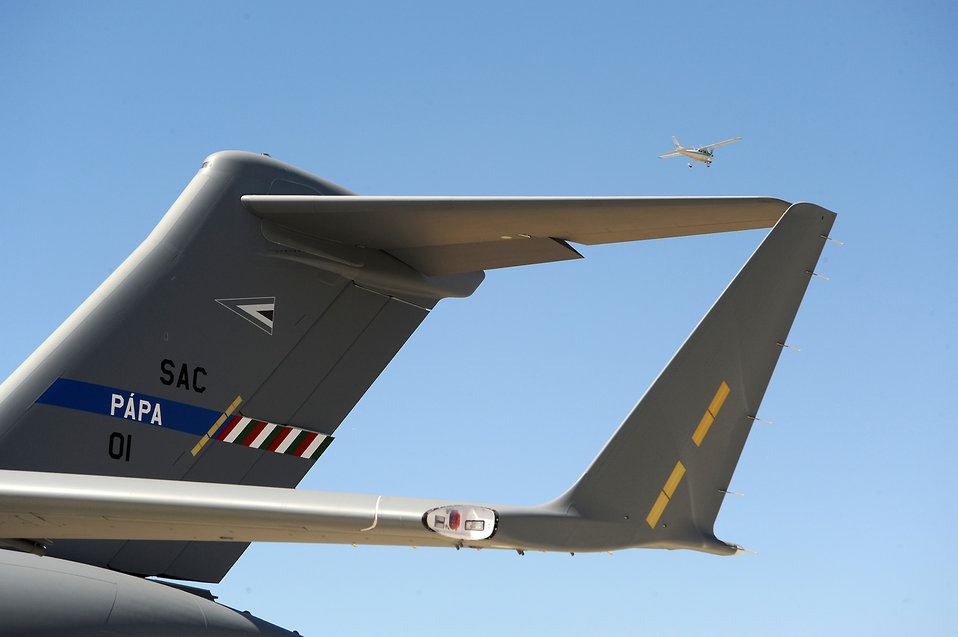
12-nation Heavy Airlift Wing takes flight with first C-17

SAC 01, the first of three C-17 Globemaster IIIs to be flown by multinational aircrews from the 12-nation Strategic Airlift Capability Program's Heavy Airlift Wing, awaits its maiden flight home July 14 from Boeing's C-17 final assembly facility in Long Beach, Calif., to P?pa Air Base, Hungary. At the hands of HAW pilots from Norway, Sweden and the U.S., SAC 01 departed Long Beach July 14.